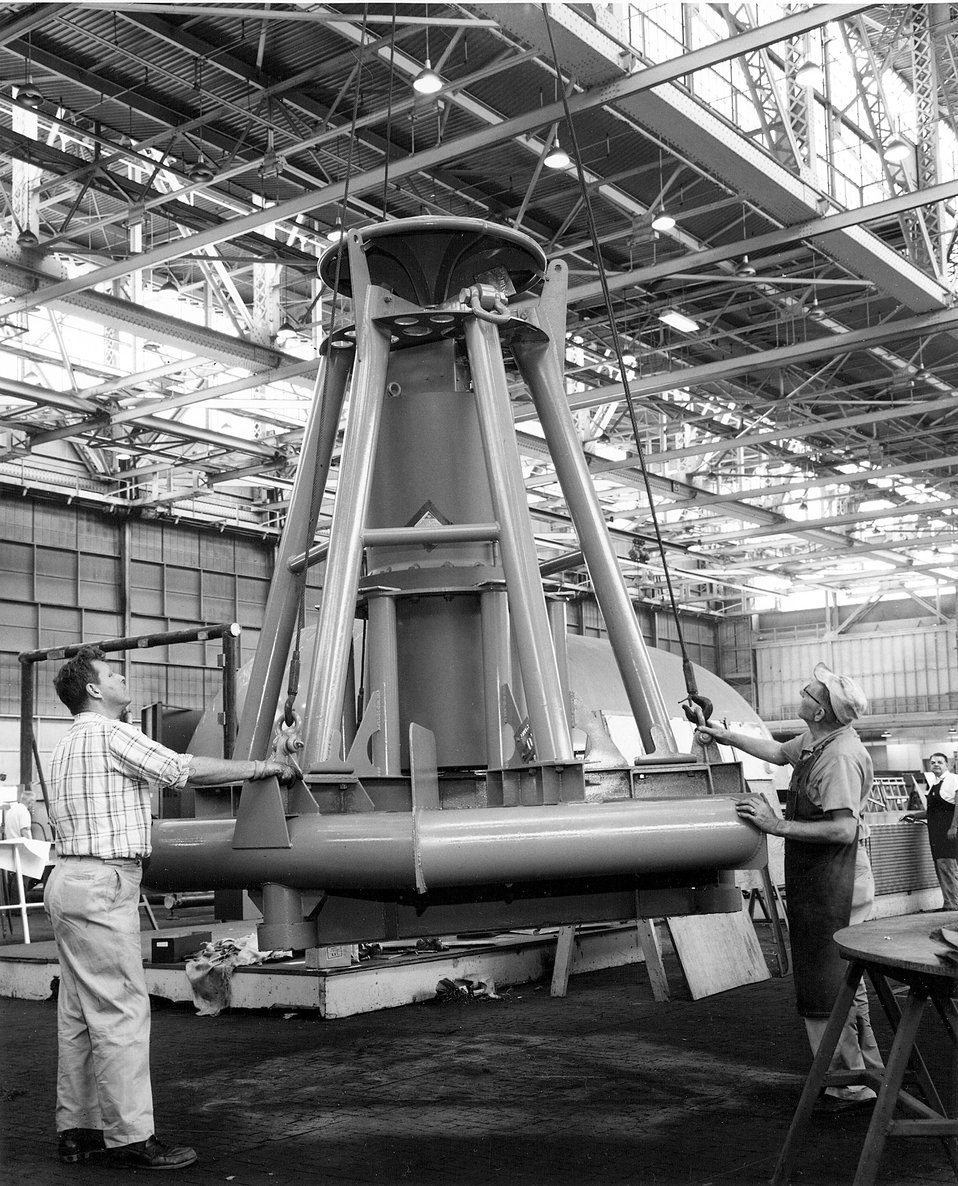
Workmen at Martin Company's Nuclear Division, Baltimore, prepare the SNAP 7E isotope generator for shipment.